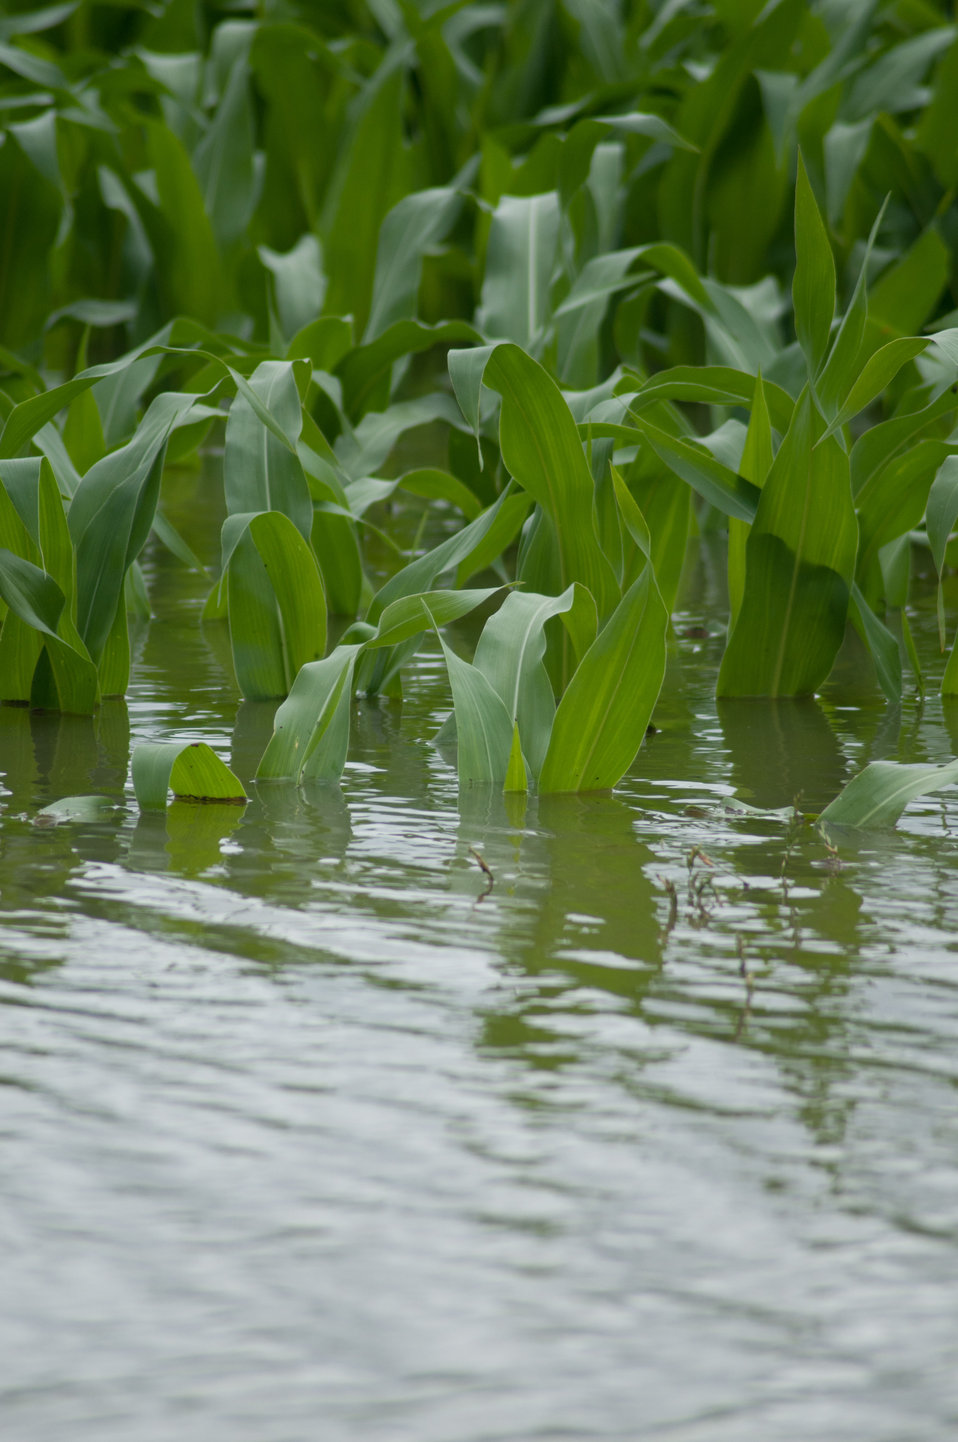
Mississippi River floodwaters have pushed into Yazoo River and into this cornfield near Yazoo City, MS, on Monday, May 16. 2011.